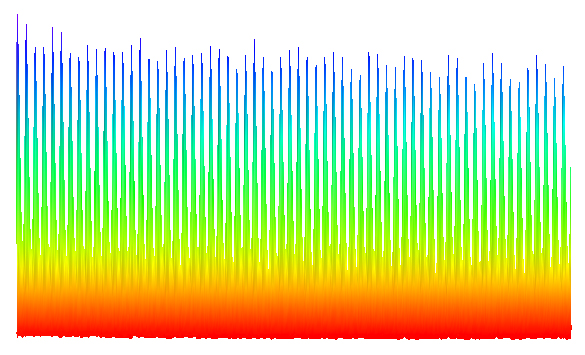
Frequency Comb, Ultrafast Laser

Experimental data from a NIST 'gap-toothed' frequency comb that is false colored to indicate the range from low power (red) to high power (blue). The comb is specially designed for astronomy. Each 'tooth' is a precisely known frequency, and the teeth are widely separated (by 20 gigahertz) in comparison to a standard comb.